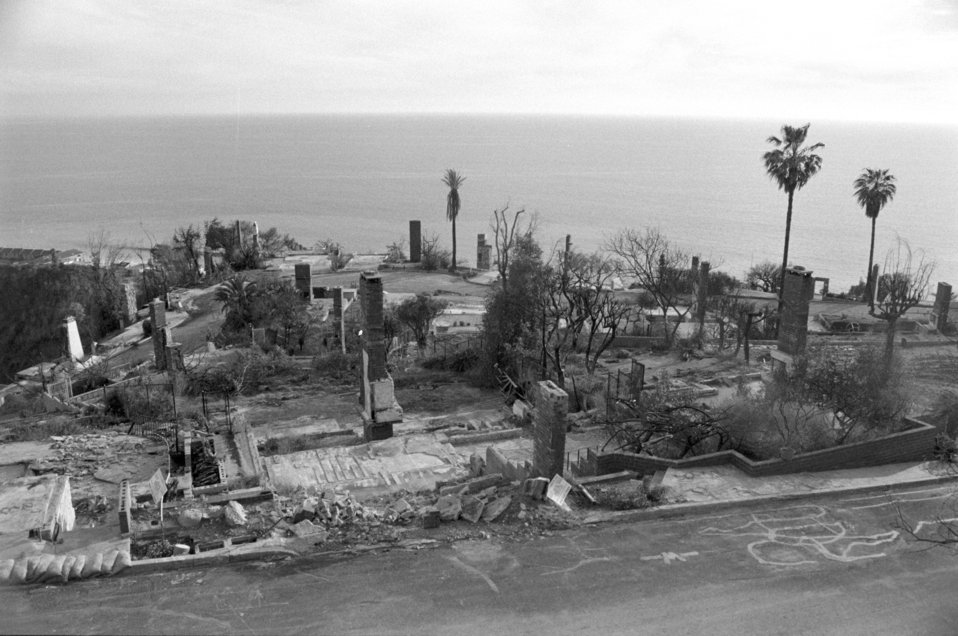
Torrential rains from El Nino created mudslides that destroyed homes along the Southern California coast on January 23, 1995.